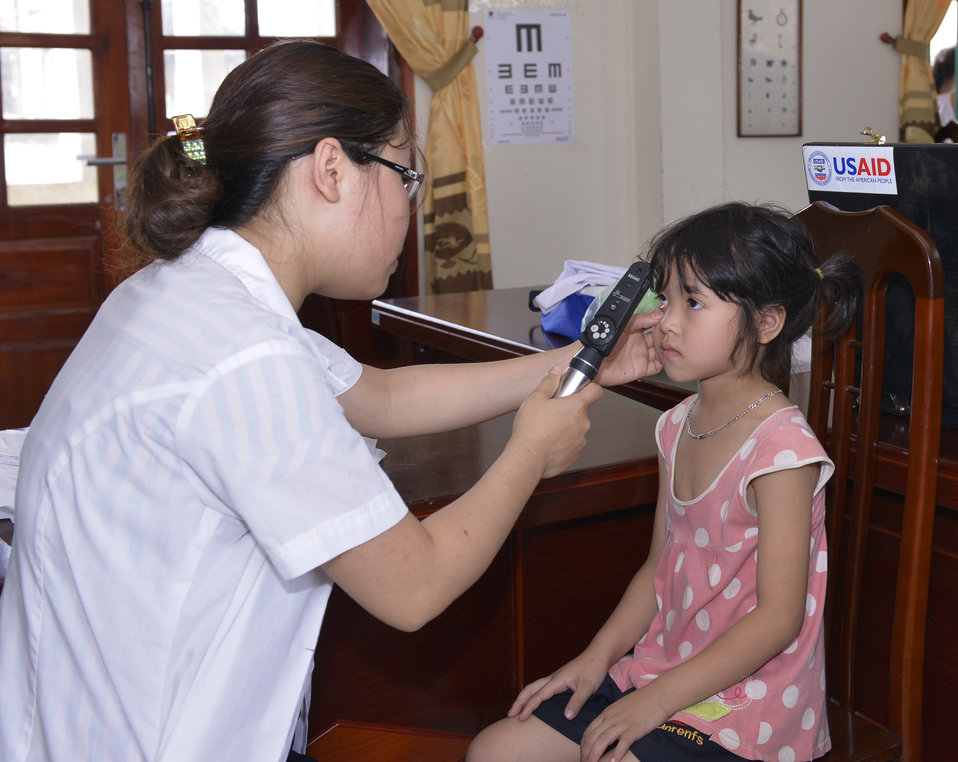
Eye screening for kindergarten children in Quoc Oai district of Hanoi

Quoc Oai, Hanoi. May 31, 2014.